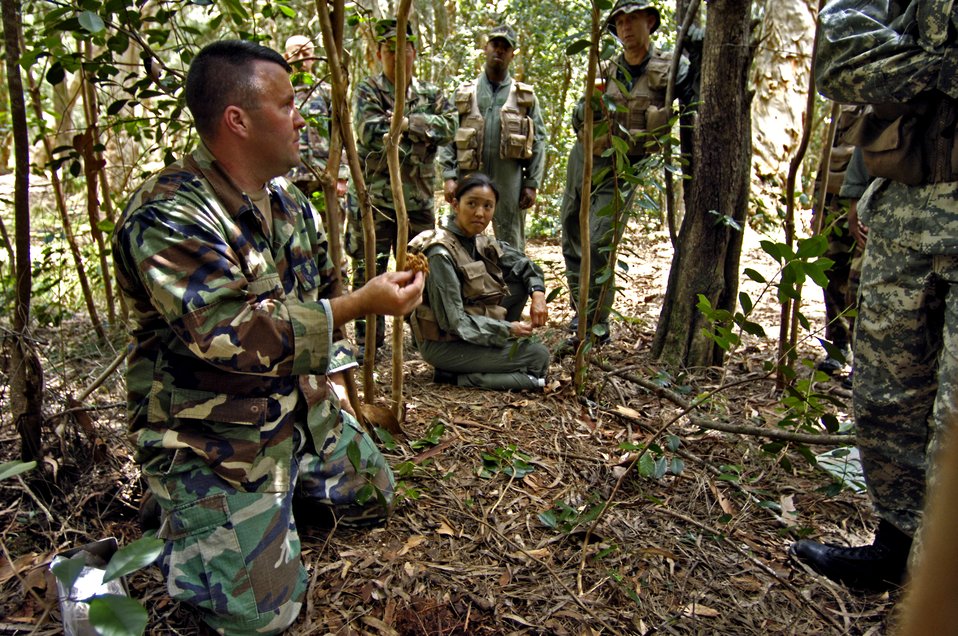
Survival refresher course

Staff Sgt. Christopher Ferguson explains how to prepare tinder to start a fire during a ground survival refresher course at Schofield Barracks, Hawaii, on Thursday, May 4, 2006. The course provides realistic training for aircrew members and concentrates on the principles, techniques and skills necessary to survive in any environment. Sergeant Ferguson is a survival, evasion, resistance and escape instructor with the 15th Operations Support Squadron at Hickam Air Force Base, Hawaii.